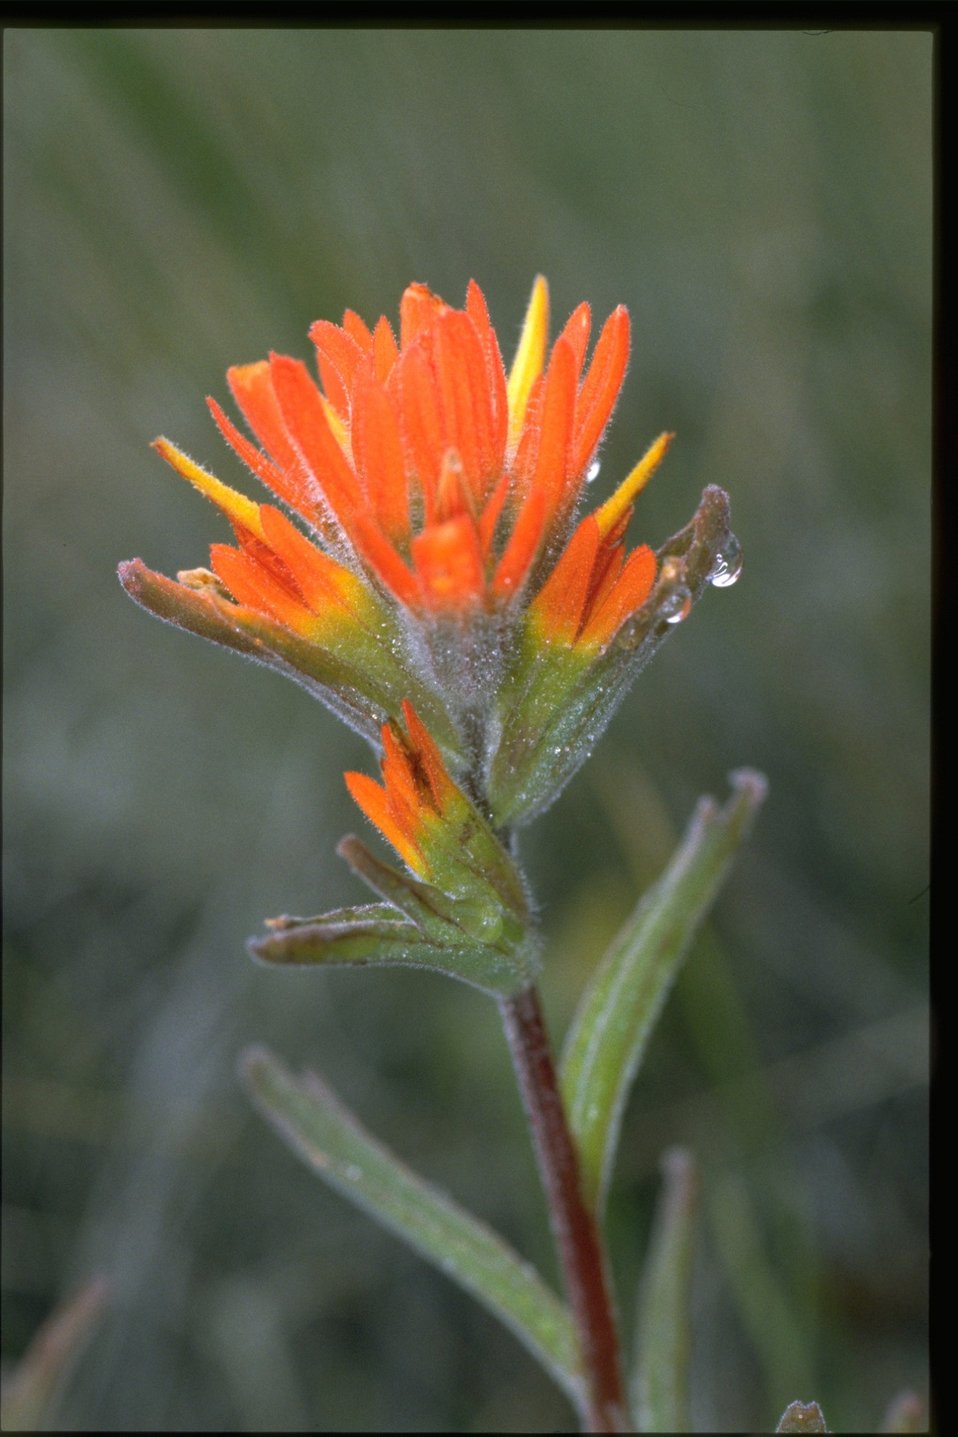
Closeup shot of Castilleja.